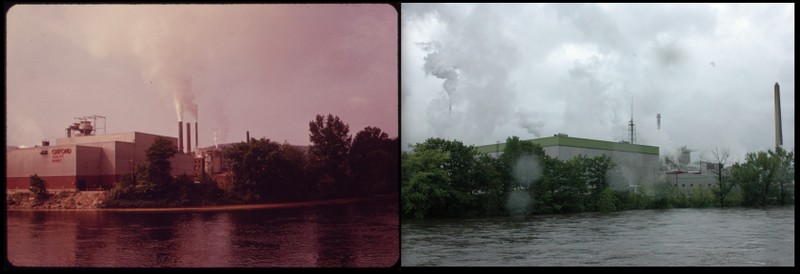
Androscoggin River, ME 1973 and 2012

'Then' Documerica Photo: June, 1973 Oxford Paper Company Mill at Rumford on the Androscoggin River. View from Mexico Across the River Shows Air and Water Pollution by Charles Steinhacker.

February, 2012 photograph by Victoria Hampshire. Victoria is the daughter of Gifford Hampshire, who served as not only as the director of Documerica, but was the energy and life behind the project's vision.

Join in at www.flickr.com/groups/ourenvironment